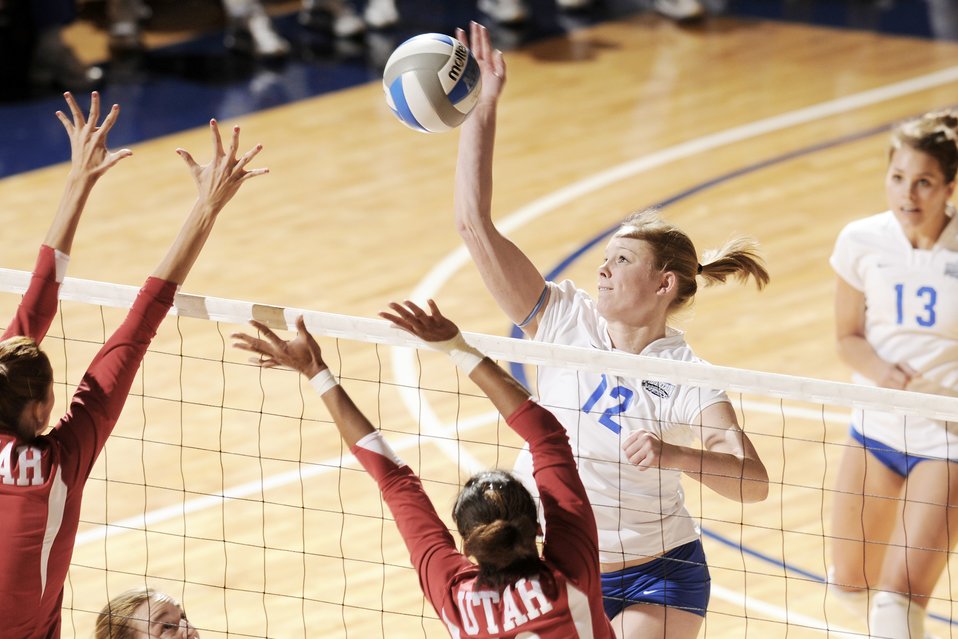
Academy women's volleyball team ends season

Falcon junior Nichole Stilwell kills the ball against Utah in Clune Arena at the U.S. Air Force Academy, Colo., Nov. 21, 2009. The Falcons lost in a three-set decision.